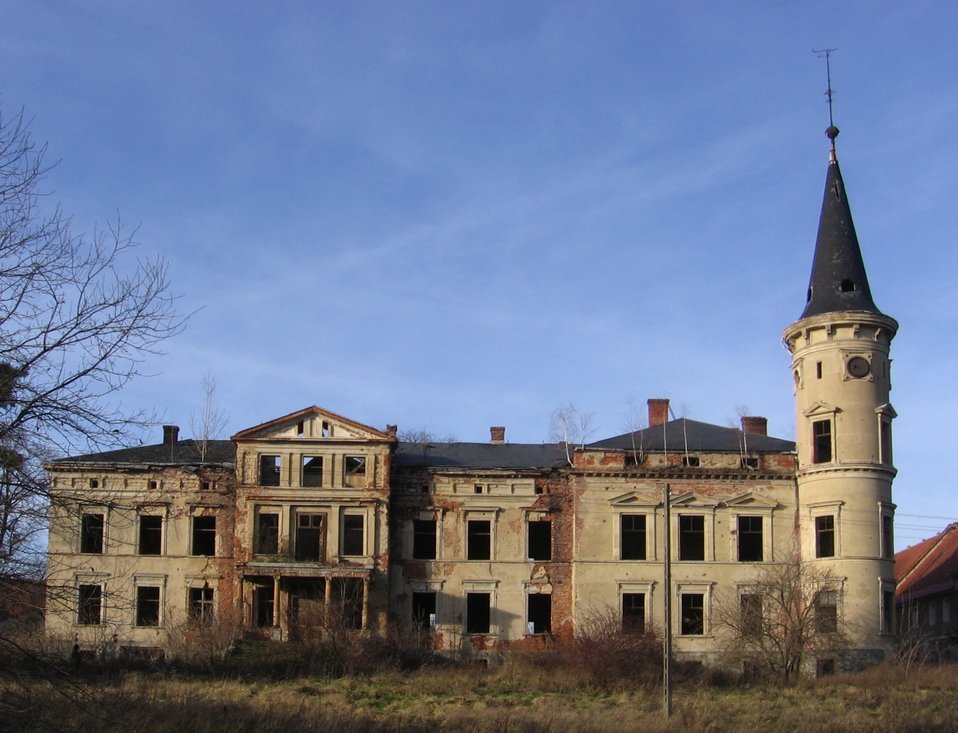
Palace in Piotrówek